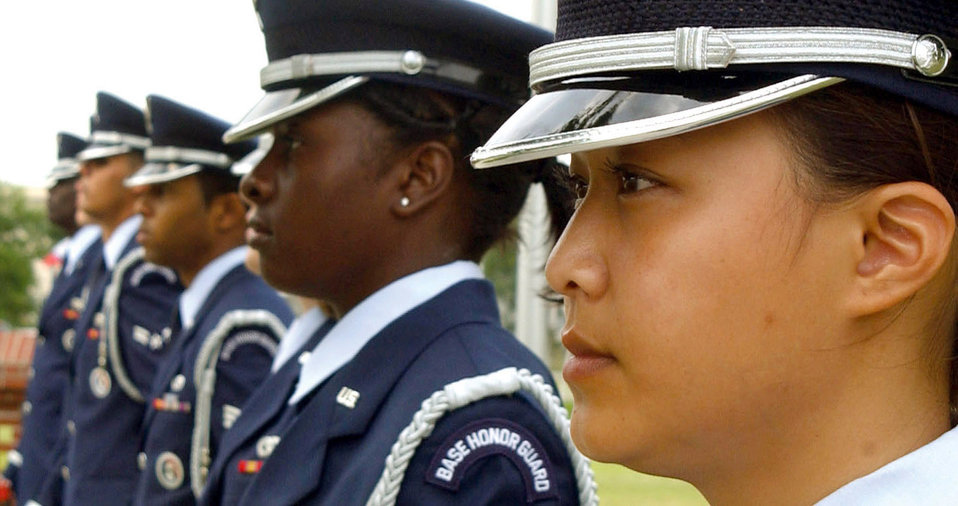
Solemn duty

CHARLESTON AIR FORCE BASE, S.C. -- The Charleston AFB Honor Guard paid tribute to fallen members of the 437th Security Forces Squadron and the Air Force Office of Special Investigations during a retreat ceremony May 16. A bell chimed 87 times, remembering 84 Air Force Security Forces members and three Air Force AFOSI agents who lost their lives in the line of duty since 1965.